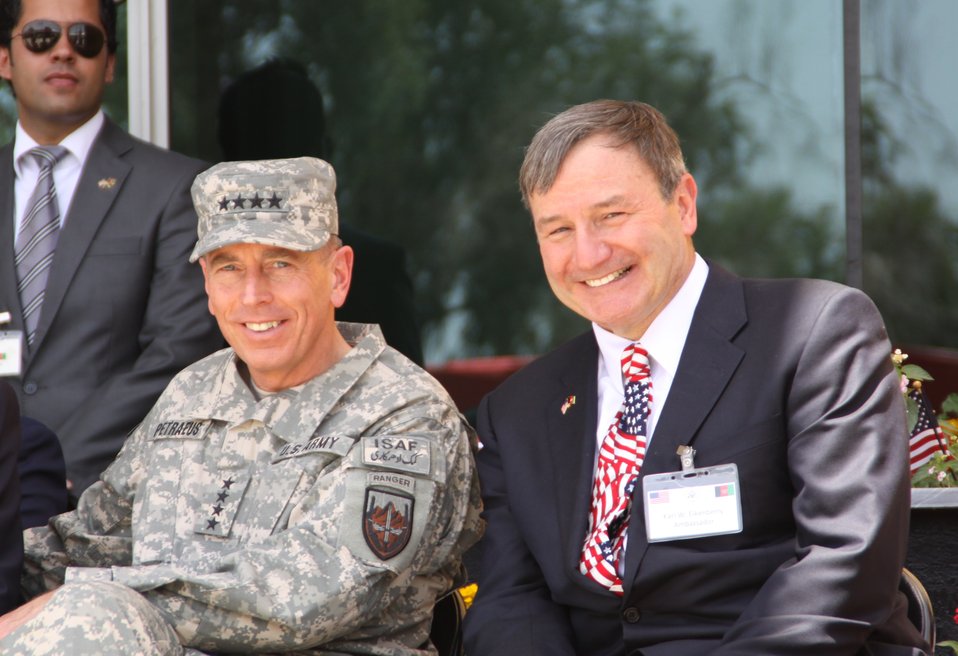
Kabul Official July 4th Celebration